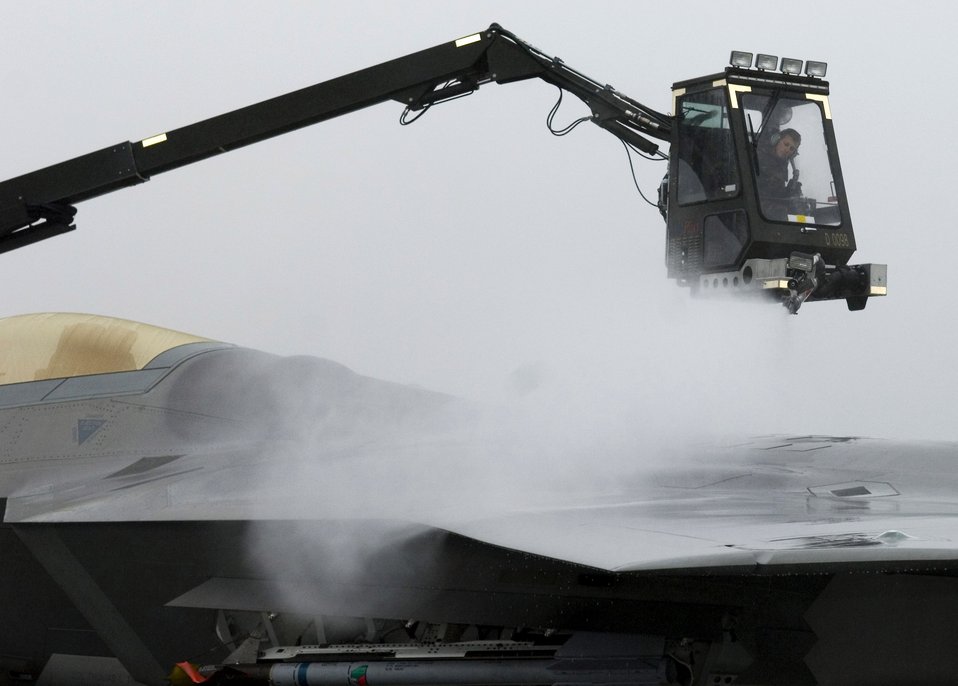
Getting ready for winter in Alaska

Airman 1st Class Alexander Buck practices de-icing an F-22 Raptor Sept. 19 at Elmendorf Air Force Base, Alaska. The de-icing test will help officials gather technical data on how cold weather effects the maintenance crew's capabilities while working with this aircraft during the winter. The onset of light dustings of snow on the surrounding mountain ranges is a sign the Alaskan winter is just around the corner. Airman Buck is assigned to the 3rd Aircraft Maintenance Squadron.